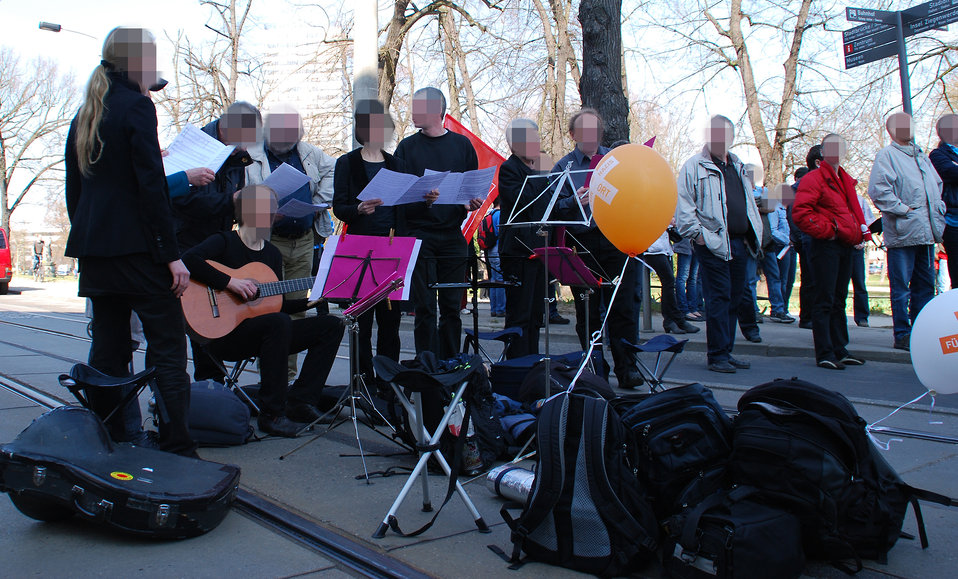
Proteste gegen den Nazi-Aufmarsch am 24.3.2012 in Frankfurt (Oder)